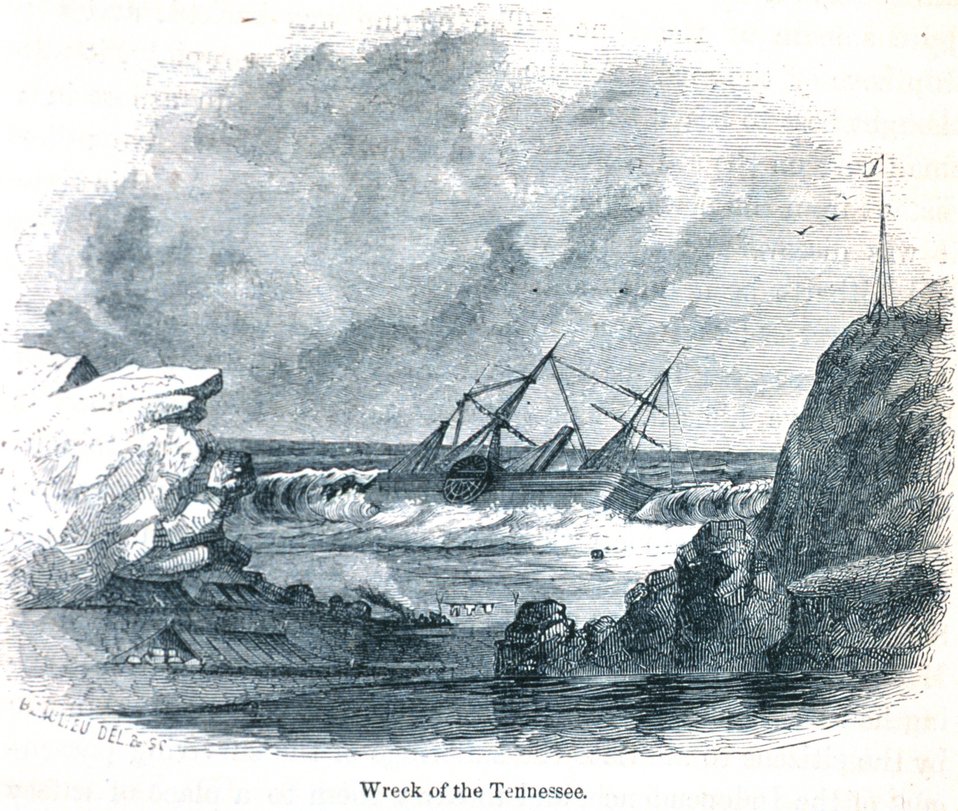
The wreck of the TENNESSEE on March 6th, 1853. In: 'The Annals of San Francisco'. Frank Soule, John Gihon, and James Nesbit. 1855. Page 435. D. Appleton & Company, New York. F869.S3.S7 1855.